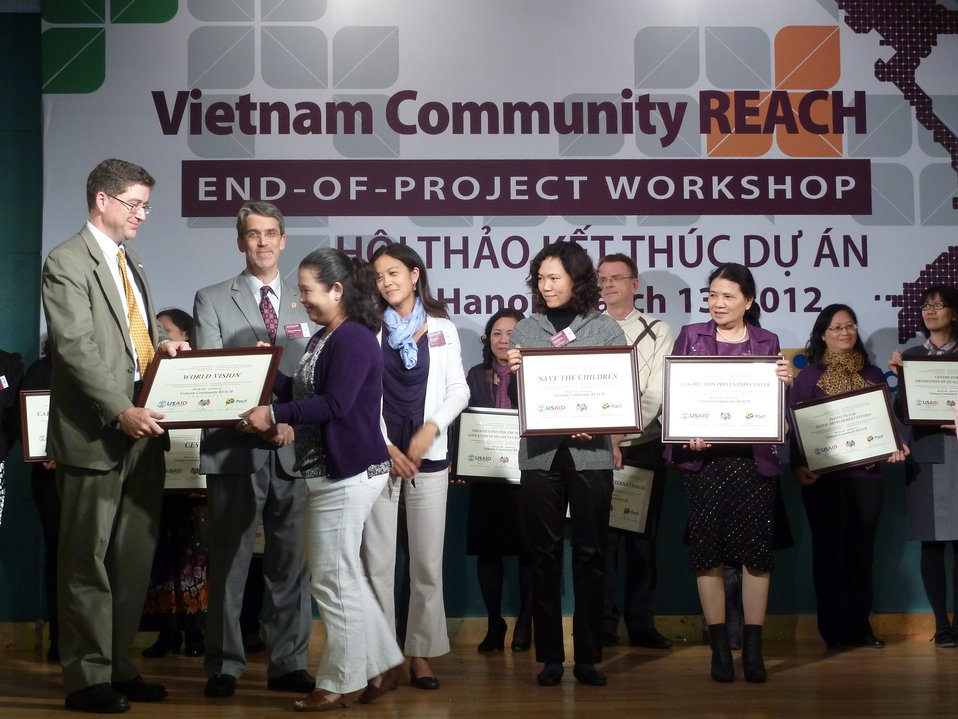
USAID, PEPFAR, and Pact award certificates to local and international partners for their work in addressing HIV in Vietnam

Community REACH project close-out with USAID and implementing partner, Pact